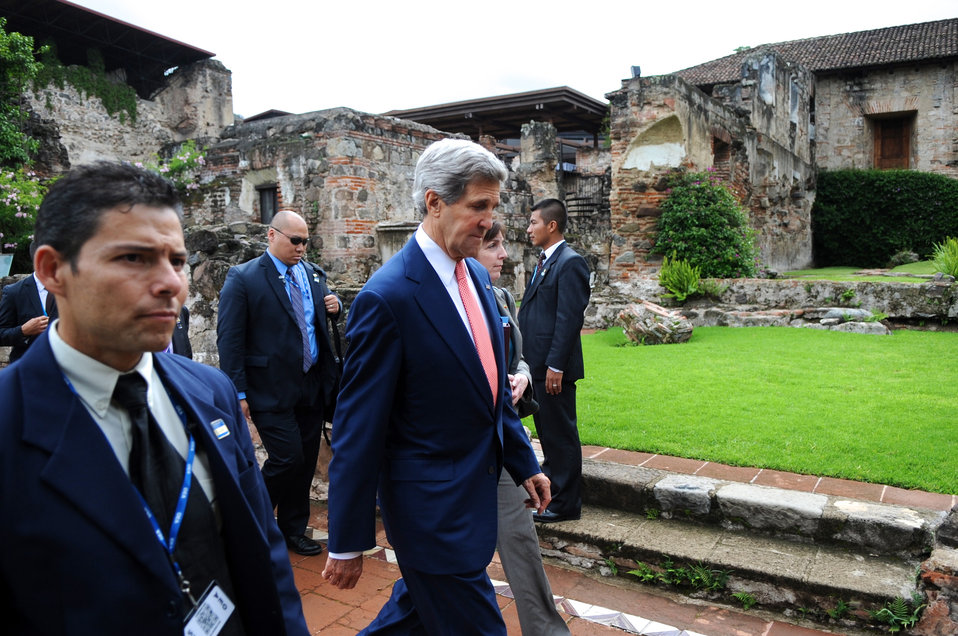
Secretary Kerry Arrives at the OAS General Assembly Plenary Session

U.S. Secretary of State John Kerry arrives at the Hotel Casa Santo Domingo to attend the Organization of American States Plenary Session in Antigua, Guatemala, on June 5, 2013.